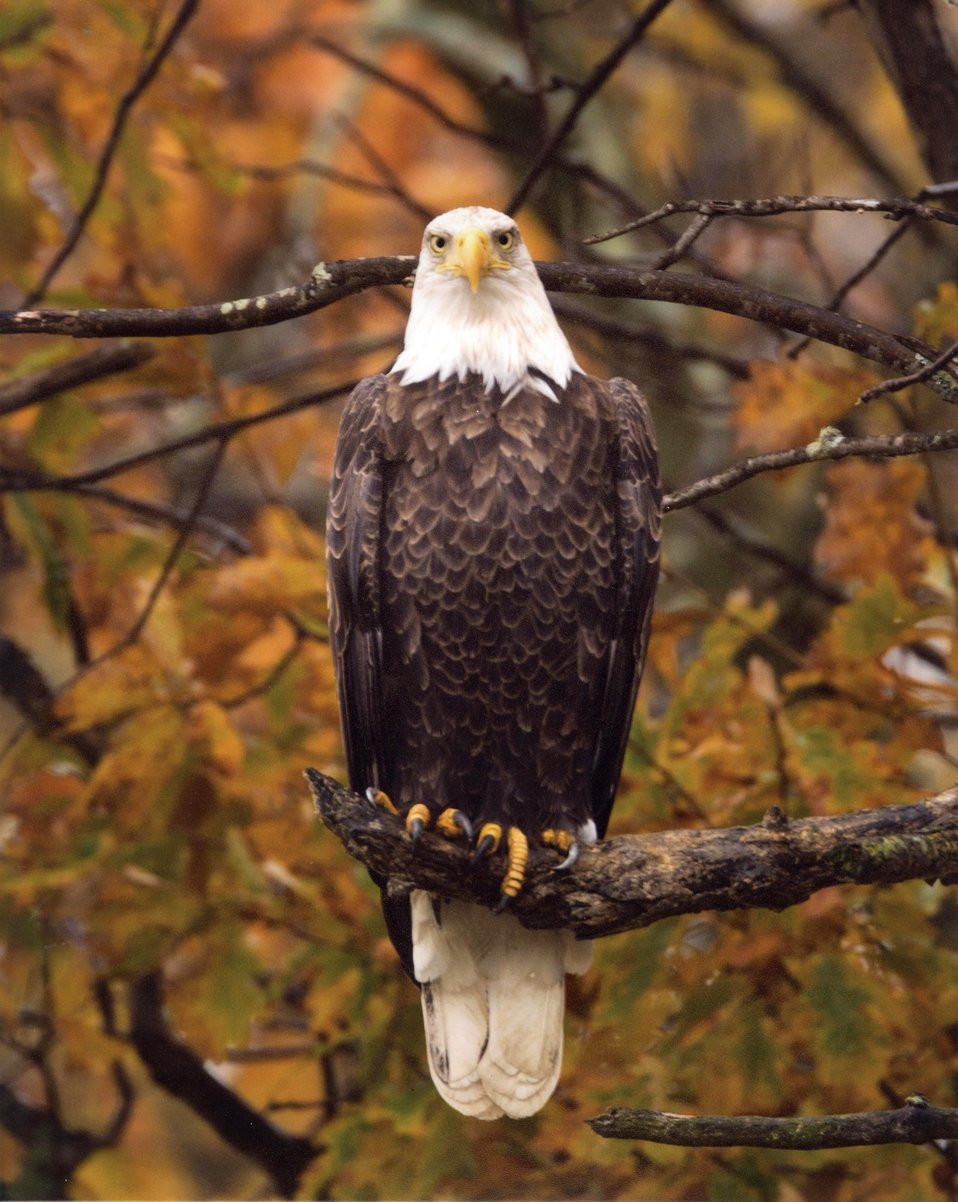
Autumn Eagle

Photo by Timothy H. Kaufman/USFWS.

Shiawassee National Wildlife Refuge 2013 Photo Contest